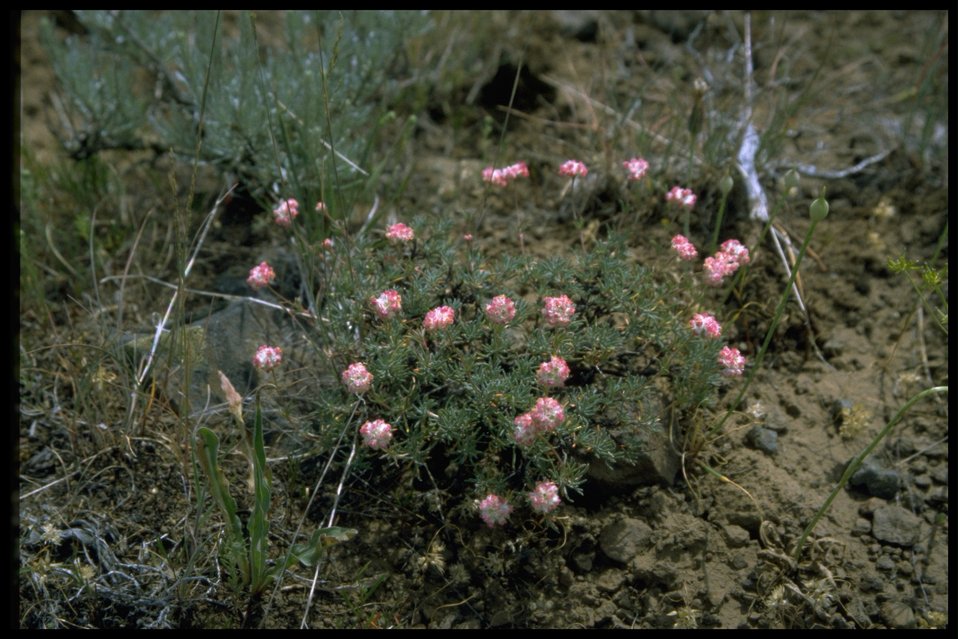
Farshot of Thyme-leaved Buckwheat wildflowers.